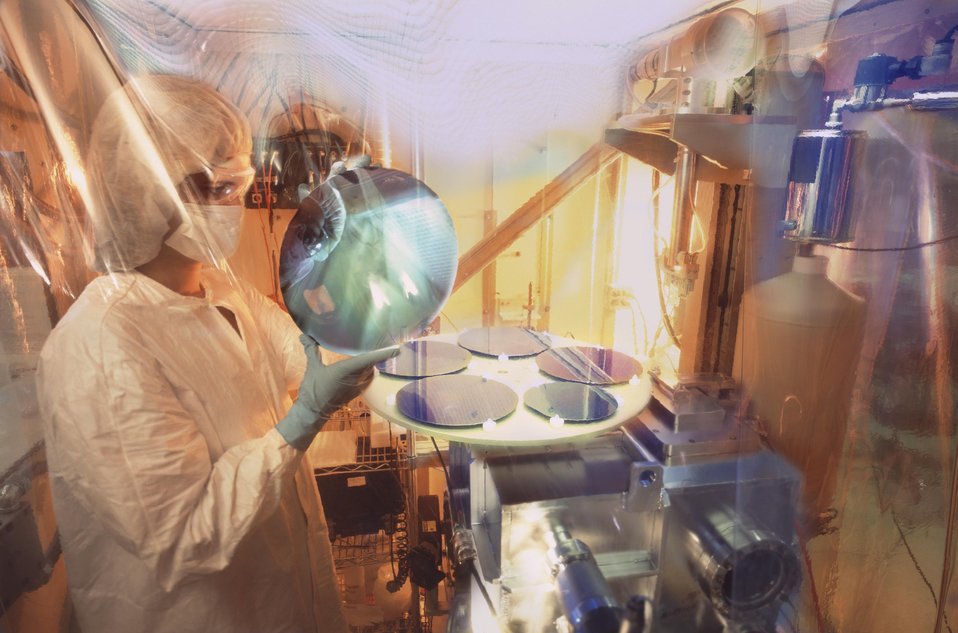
CHECKING SILICON WAFERS FOR MINUTE IMPURITIES AT THE STANFORD SYNCHROTRON RADIATION LAB.

SSRL IS A DIVISION OF SLAC DEVOTED TO RESEARCH USING SYNCHROTRON RADIATION, THE ELECTROMAGNETIC RADIATION EMITTED WHEN CHARGED PARTICLES TRAVEL IN CURVED PATHS. SSRL IS FUNDED BY DOE AS A NATIONAL USER FACILITY. THERE ARE 26 EXPERIMENTAL STATIONS ON THE 10 MAIN BEAM LINES ON THE 3 GEV STORAGE RING SPEAR, MAKING IT POSSIBLE FOR 26 EXPERIMENTS TO RUN AT THE SAME TIME.